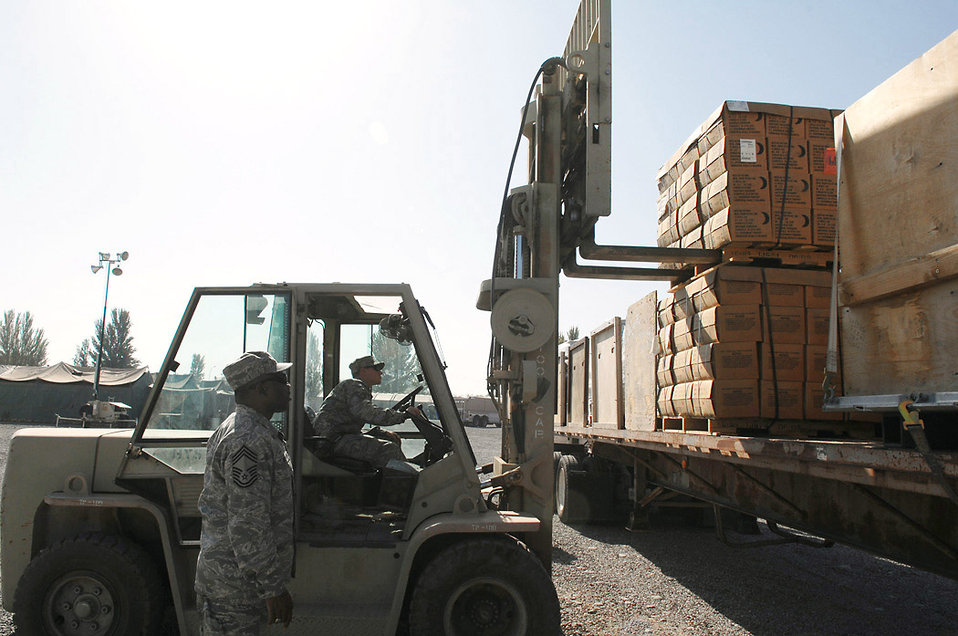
Manas Air Base provides aid to earthquake victims

Chief Master Sgt. Stanley Walker, helps guide forklift driver, Tech. Sgt. Daryl Maniscalco, as he loads a pallet of food rations to a flatbed truck of humanitarian aid intended for survivors of an Oct. 5 earthquake in southern Kyrgyzstan. Airmen from Manas Air Base, Kyrgyzstan, sent thousands of pounds of aid, Oct. 8, that included pallets of food rations, bottled water, surplus military cold weather gear and more than 120 boxes containing 3,000 pounds of adult and children's winter clothing, blankets and toys. A call for personal donations resulted in more than 40 Airmen donating their own blankets they deployed here with. Chief Walker is assigned to the 376th Expeditionary Logistics Squadron.